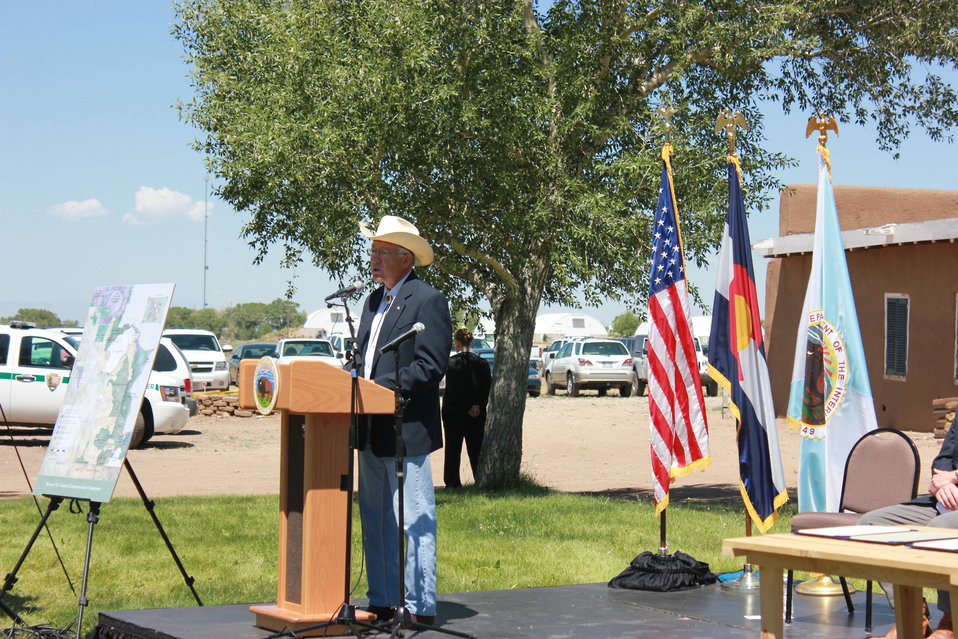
Historic Conservation Easement in Sangre de Cristo Mountains